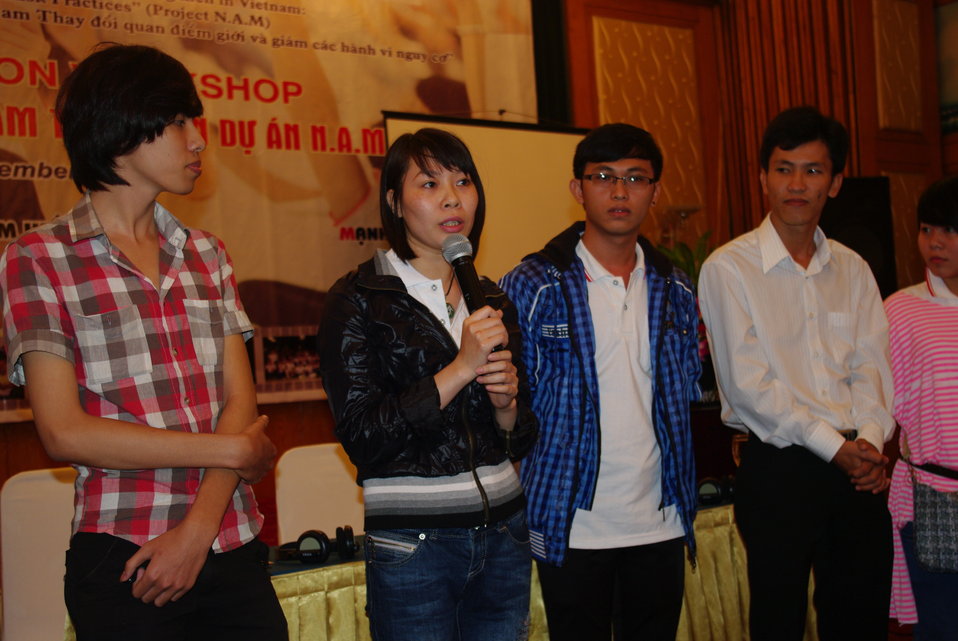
USAID Supports HIV Awareness among Street Youth and Young Men

Trainers and peer educators tell their stories on November 29, 2011, in Hanoi, Vietnam